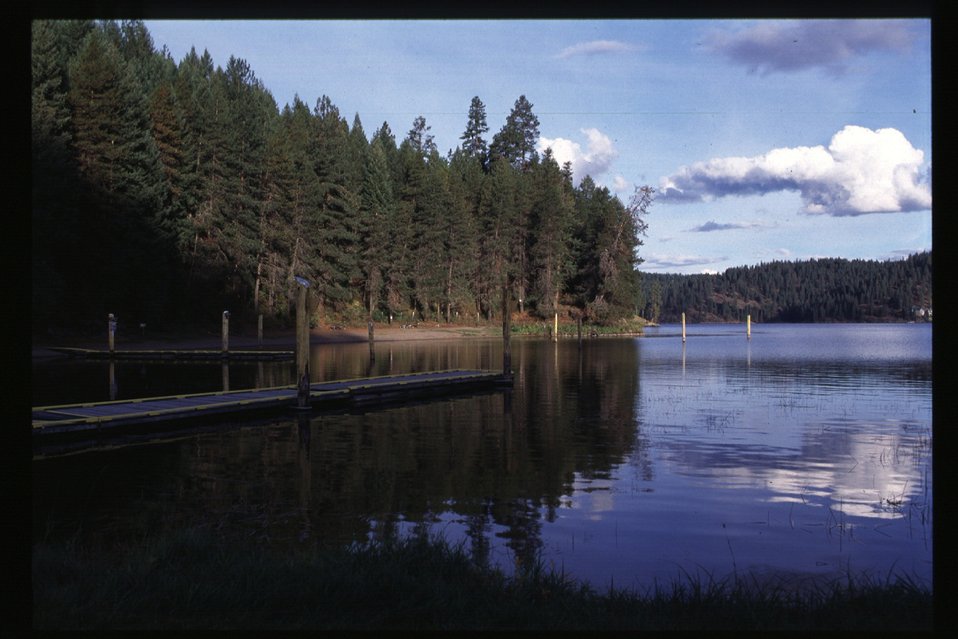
Scenic Mica Bay Couer d'Alene Field Office UCSC Upper Columbia Salmon Clearwater District